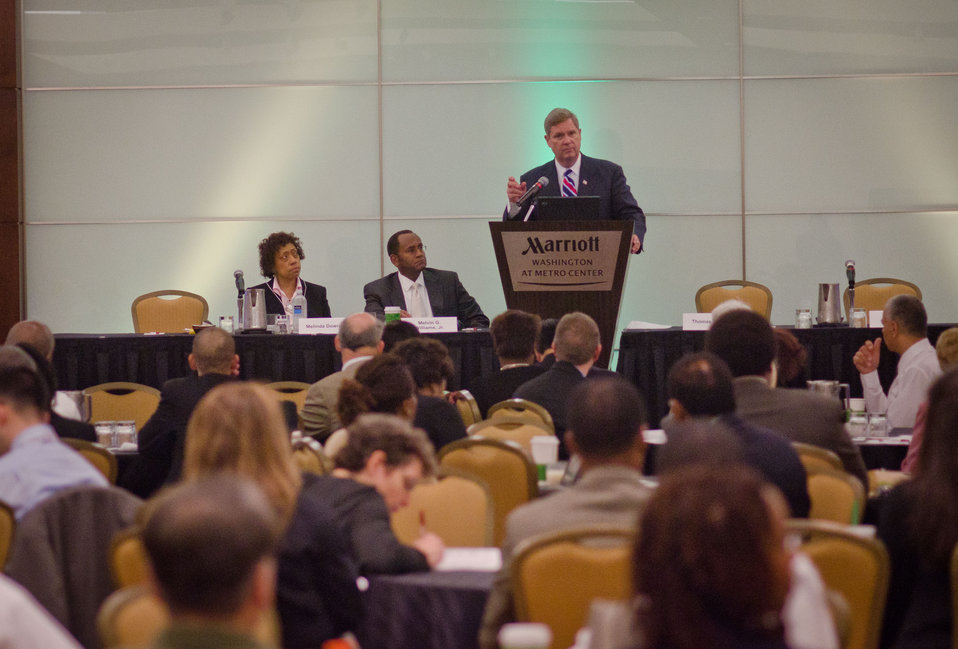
The Departments of Energy, Agriculture, Interior, the Environmental Protection Agency, the National Small Town Alliance, the Howard University School of Law and other partners held the State of Environmental Justice in America 2011 Conference in Washington, D.C., May 27-29, 2011. The year’s theme was 'Building the Clean Energy Economy with Equity.' The focus is on climate change, green jobs and equity for low-income, minority and Tribal populations. Agriculture Secretary Tom Vilsack was the keynote speaker at the Minority Alternative and Renewable Energy Consortium Forum on Thursday, Apr. 28, 2011 in Washington, DC.